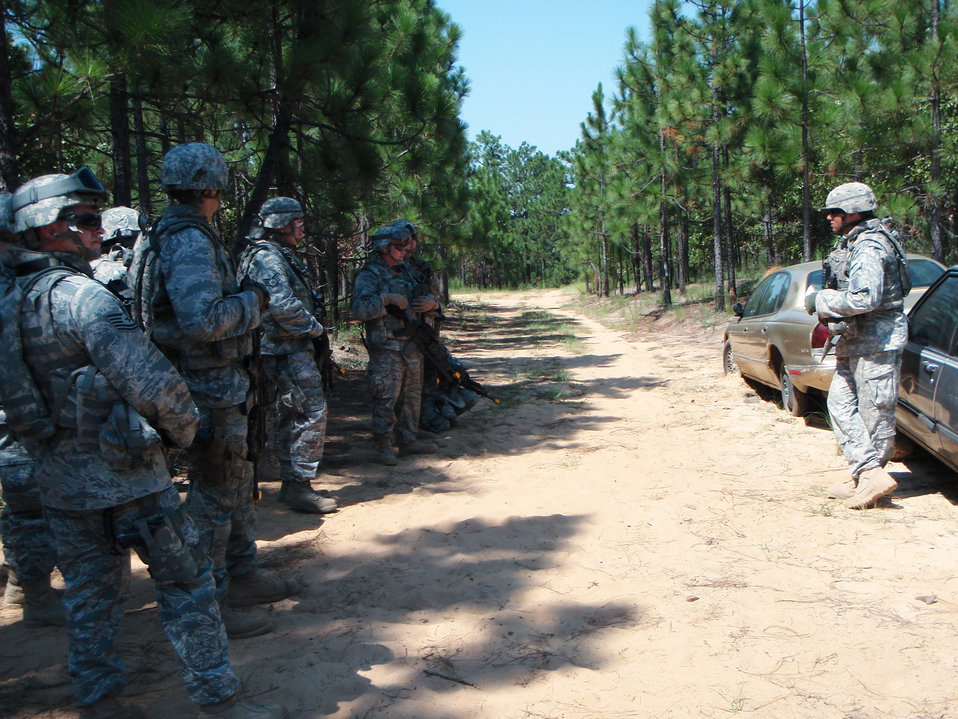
Airmen and Soldiers train for Zabul Provincial Reconstruction Team

Army Sgt. Frank Parsons explains the characteristics of vehicle-borne IEDs to members of the Zabul Provincial Reconstruction Team. The team along with 11 other reconstruction teams are training at Fort Bragg, N.C., for an upcoming deployment. Sergeant Parsons is a 189th Infantry Brigade instructor.